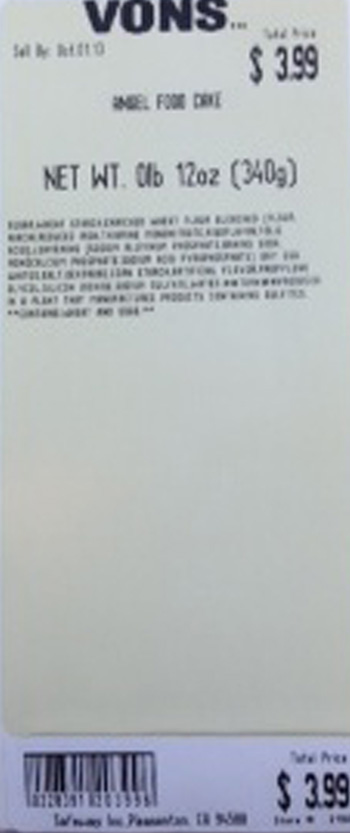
RECALLED – Angel Food Cakes

September 26, 2013 – Product Recall – Safeway Recalls Several Varieties of Angel Food Cake Due to Undeclared Soy and Milk Allergens.